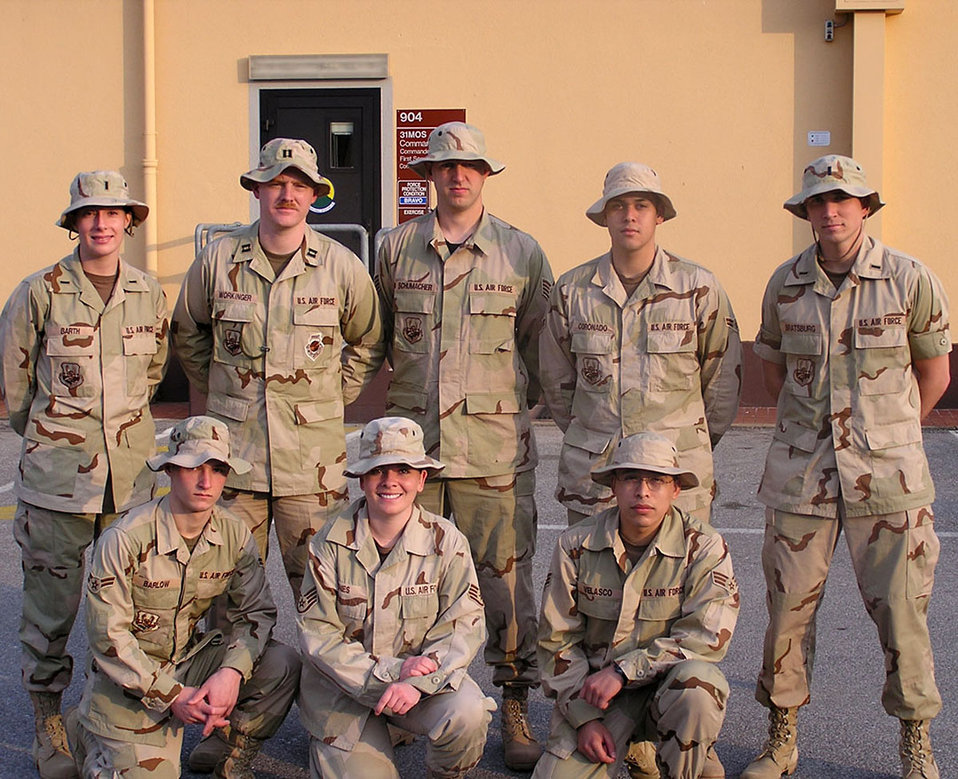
31st Fighter Wing deployment in 2005

Kneeling (left to right): Airman 1st Class Jacob Barlow, Staff Sgt. Tina Jones, Senior Airman Franklin Velasco and standing (left to right): 1st. Lt. Karen Barth, Capt. Christopher Workinger, Staff Sgt. Mark Schumacher, Airman 1st Class Josh Coronado and 1st Lt. Matthew Bratsburg take a break at their deployed location. The Airmen were from the 31st Operations Support Squadron Intelligence Flight which deployed to Southwest Asia from May to September 2005.